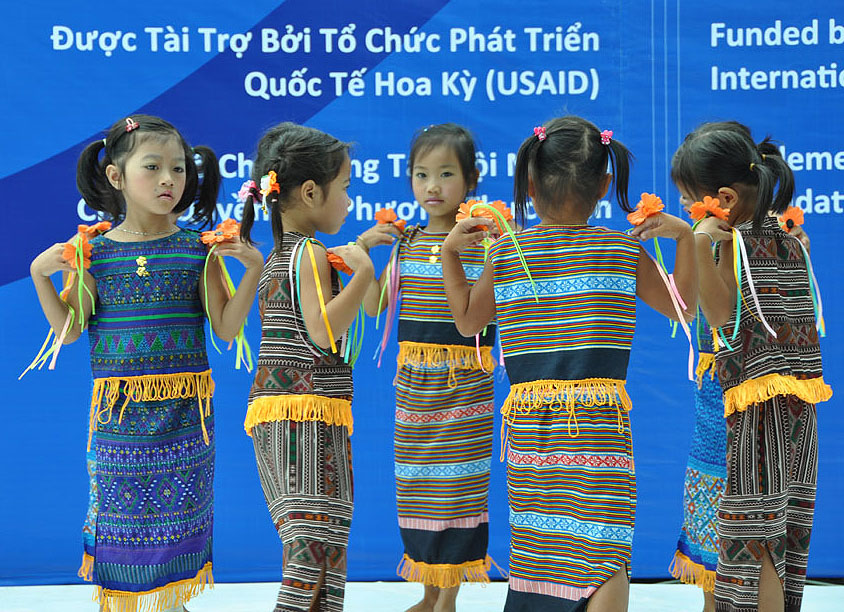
Children celebrate 25 refurbished and expanded kindergartens.